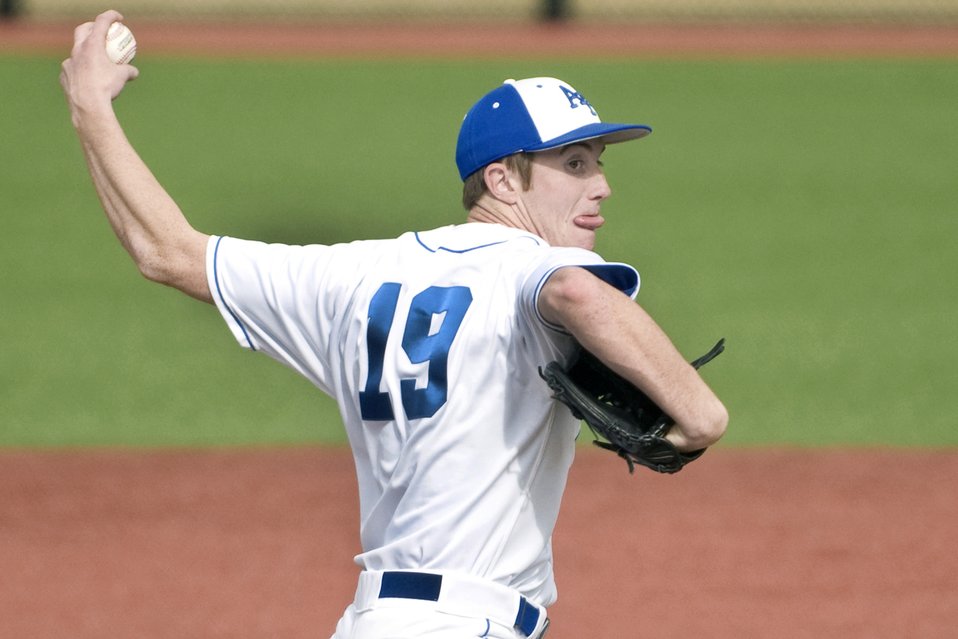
Falcons defeat the Cougars

Air Force sophomore pitcher Andrew Loyd delivers a pitch during the Falcons March 30, 2010 contest against Colorado Christian University held at the U.S. Air Force Academy's Falcon Field in Colorado. The Falcons defeated the Cougars 25-7.